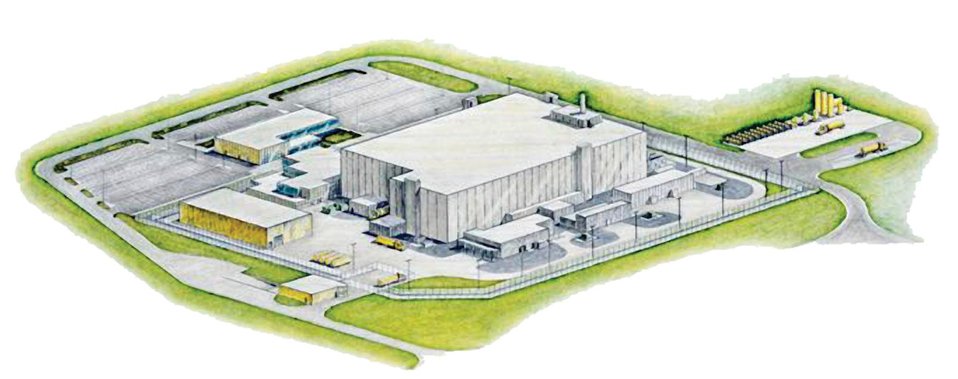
ARTIST'S CONCEPT OF THE FUTURE MIXED OXIDE FUEL FABRICATION FACILITY AT THE SAVANNAH RIVER SITE.

SRS IS THE SITE OF THE NATIONAL NUCLEAR SECURITY ADMINISTRATION'S FUTURE PLUTONIUM DISPOSITION MISSIONS, WHICH WILL CONVERT SURPLUS WEAPONS PLUTONIUM TO A FUEL SUITABLE FOR USE IN COMMERCIAL NUCLEAR POWER REACTORS. THE TWO KEY FACILITIES WILL BE THE MOX FUEL FABRICATION FACILITY (MFFF), WHICH WILL BLEND PLUTONIUM OXIDE WITH URANIUM OXIDE TO FORM A MIXED OXIDE FUEL, AND THE PIT DISASSEMBLEY AND CONVERSION FACILITY, WHICH WILL SUPPLY MOST OF THE FEED FOR THE MFFF BY DISMANTLING SURPLUS NUCLEAR WEAPONS PITS AND CONVERTING THE WEAPONS USABLE PLUTONIUM TO OXIDE.